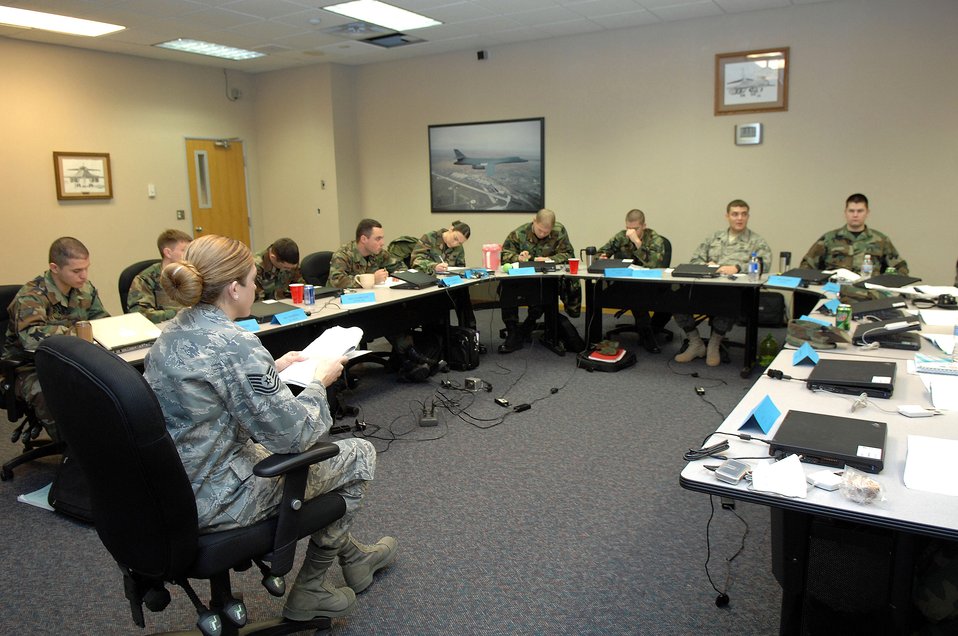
New ALS curriculum creates new challenges

Tech. Sgt. Heather McDougall teaches Airmen during Airman Leadership School Dec. 11 at Ellsworth Air Force Base, S.D. Calendar year 2008 marks the beginning of significant changes to the core curriculum of all Air Force Airman Leadership Schools. The changes will affect all aspects of the ALS training regimen. ALS is a 192-hour, 24-academic-day class whose mission is to prepare senior airmen for supervisory duties and foster a commitment to the profession of arms.